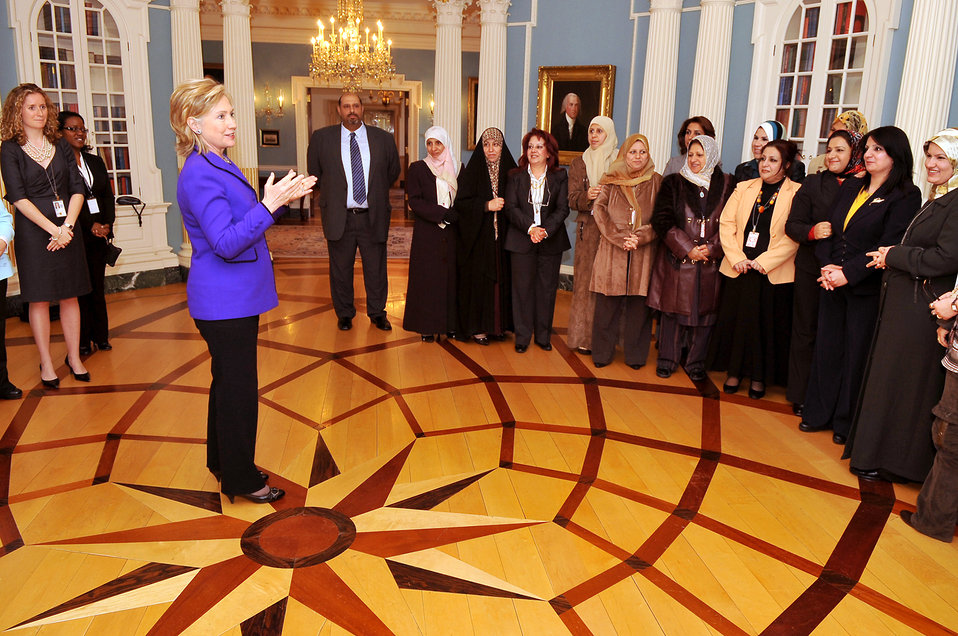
Secretary Clinton Meets With Iraqi Women Leaders

U.S. Secretary of State Hillary Rodham Clinton meets with twenty-two Iraqi Women Provincial Council Leaders at the U.S. Department of State in Washington, DC March 16, 2010.